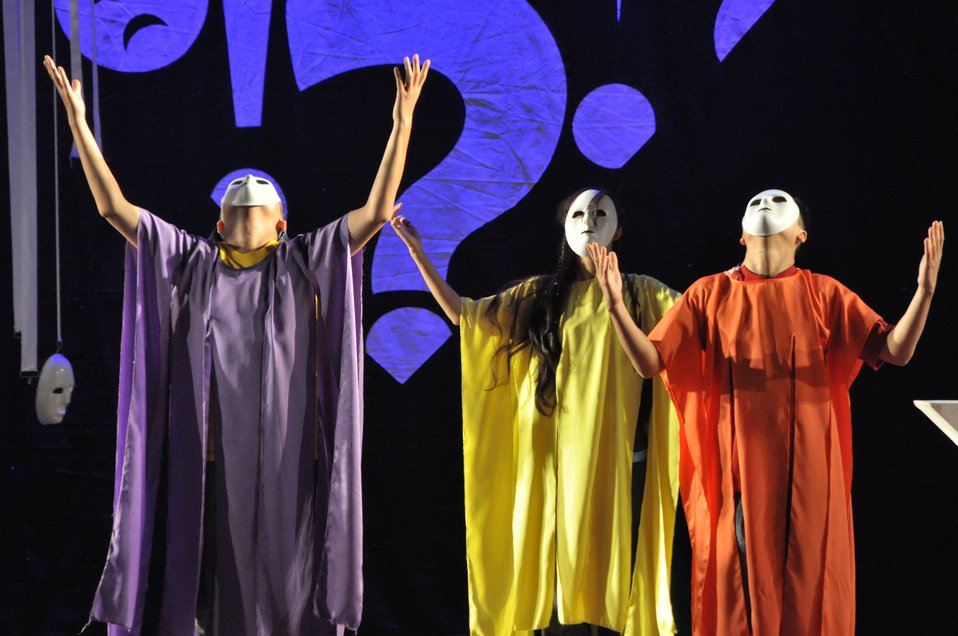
PEPFAR Musical Questions and Exclamations

Hanoi, May 17, 2013